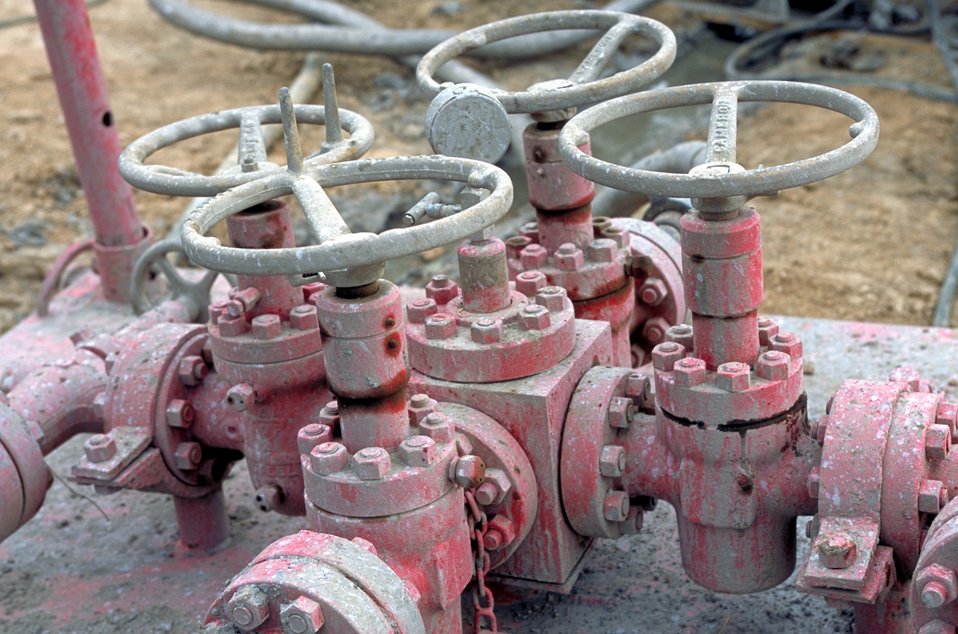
Drilling for coal bed methane near Price, Utah.